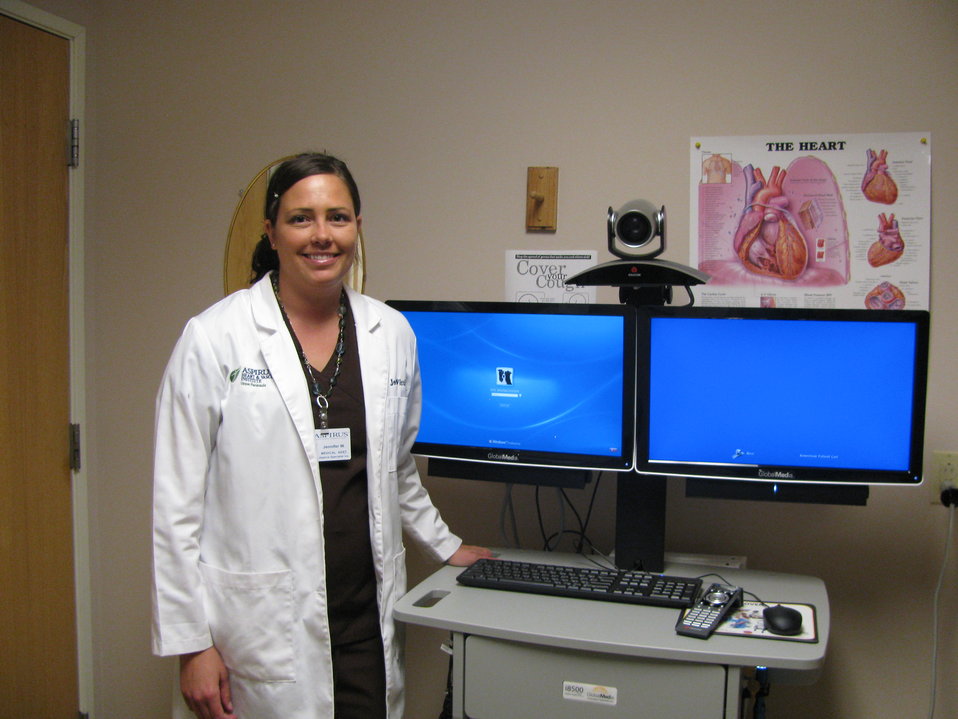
Jennifer Witting, nurse at Aspirus Keweenaw Hospital in Laurium, Michigan

Nurse Jennifer Witting stands beside newly installed telemedicine equipment at the Aspirus Keweenaw Hospital in Laurium, MI on June 20, 2012. The Aspirus Health Foundation, Inc. received two Distance Learning and Telemedicine (DLT) grants through the U.S. Department of Agriculture’s (USDA) Rural Development (RD) DLT Program, that enabled Aspirus to grow their Telehealth infrastructure into communities in north-central Wisconsin and the western Upper Peninsula of Michigan.